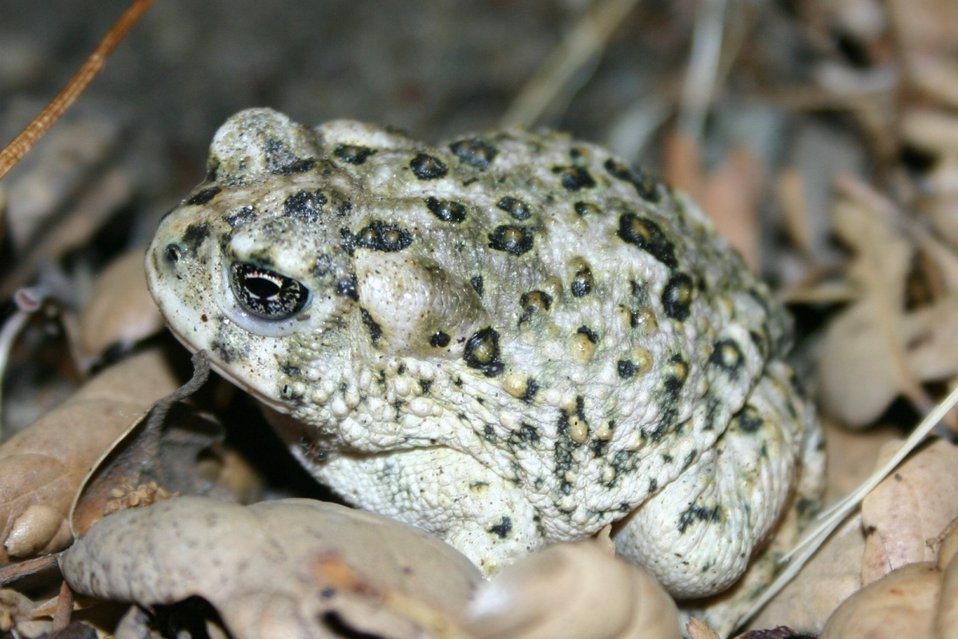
An arroyo toad

Will Flaxington/USFWS